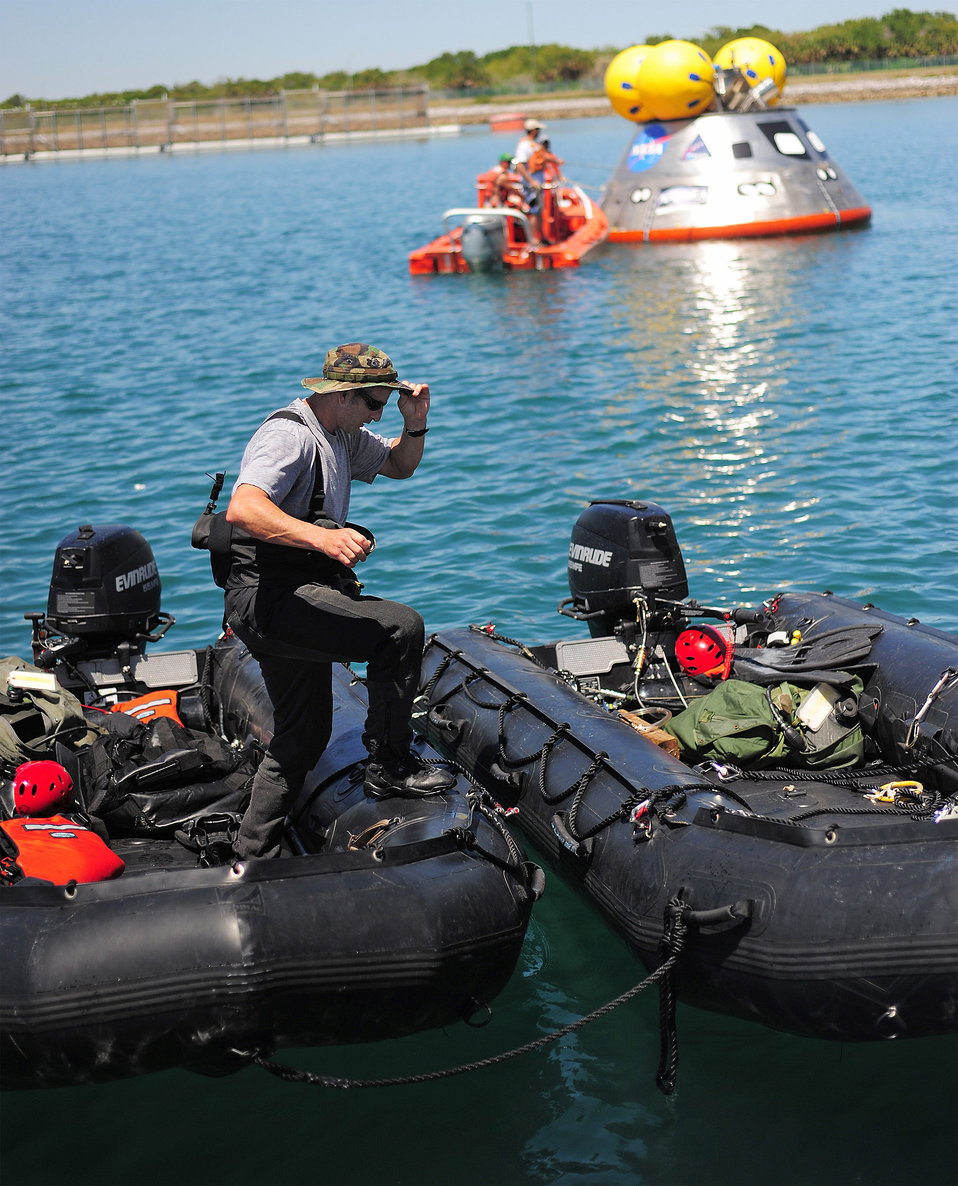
Pararescuemen conduct water test of new NASA capsule

Master Sgt. Chris Seinkner uses a pair of inflatable Zodiac boats as a bridge back to dry land after testing a mockup of the Orion crew exploration vehicle (seen in the background) March 8 at the Trident Basin at Port Canaveral, Fla. Sergeant Seinkner was part of a six-man team of pararescuemen testing an inflatable flotation collar. The collar is designed both to stabilize the capsule after water landing and provide a platform for recovery personnel to stand on during the operation. Sergeant Seinkner is a pararescueman from the Air Force Reserve's 920th Rescue Wing.